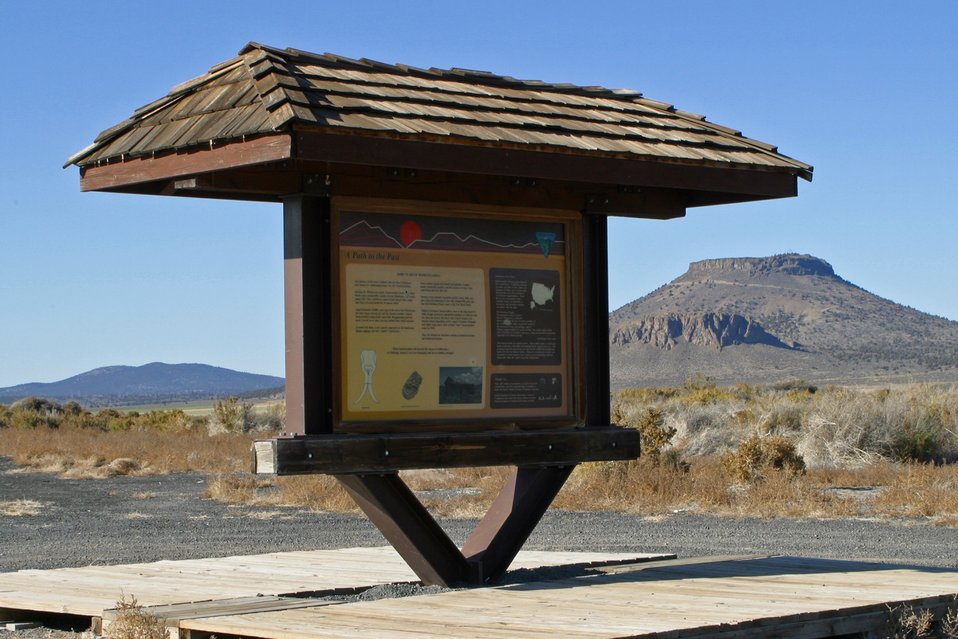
BLM Christmas Valley Back Country Byway kiosk in eastern Oregon alone State Highway 31 with Fort Rock State Natural area in the background.